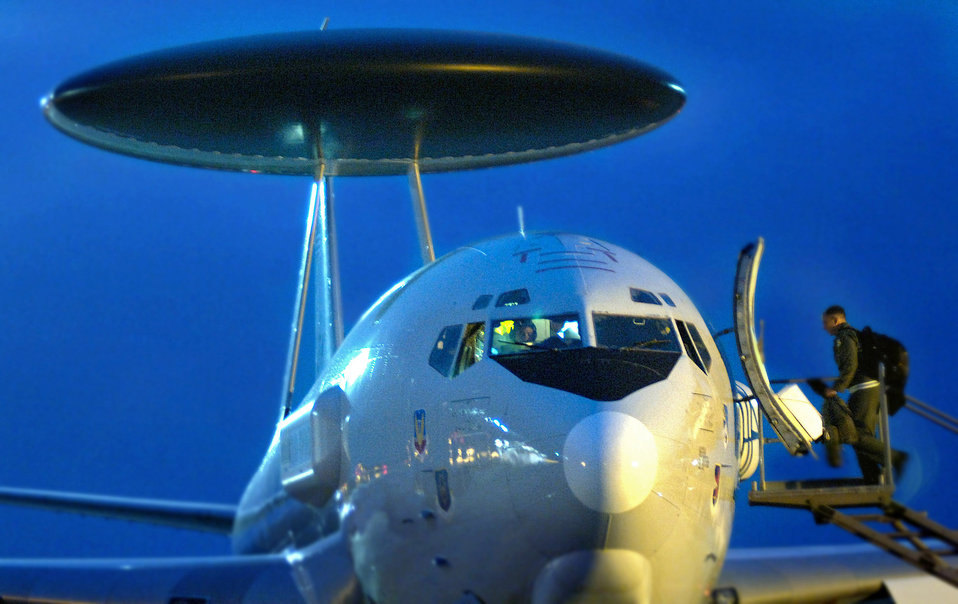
They can't hide

An E-3 Sentry airborne warning and control system aircrew member boards the surveillance aircraft before a mission over the eastern Pacific Ocean Aug. 1. The aircraft, whose mission is to search for illegal drug runners, found five possible targets during the flight.